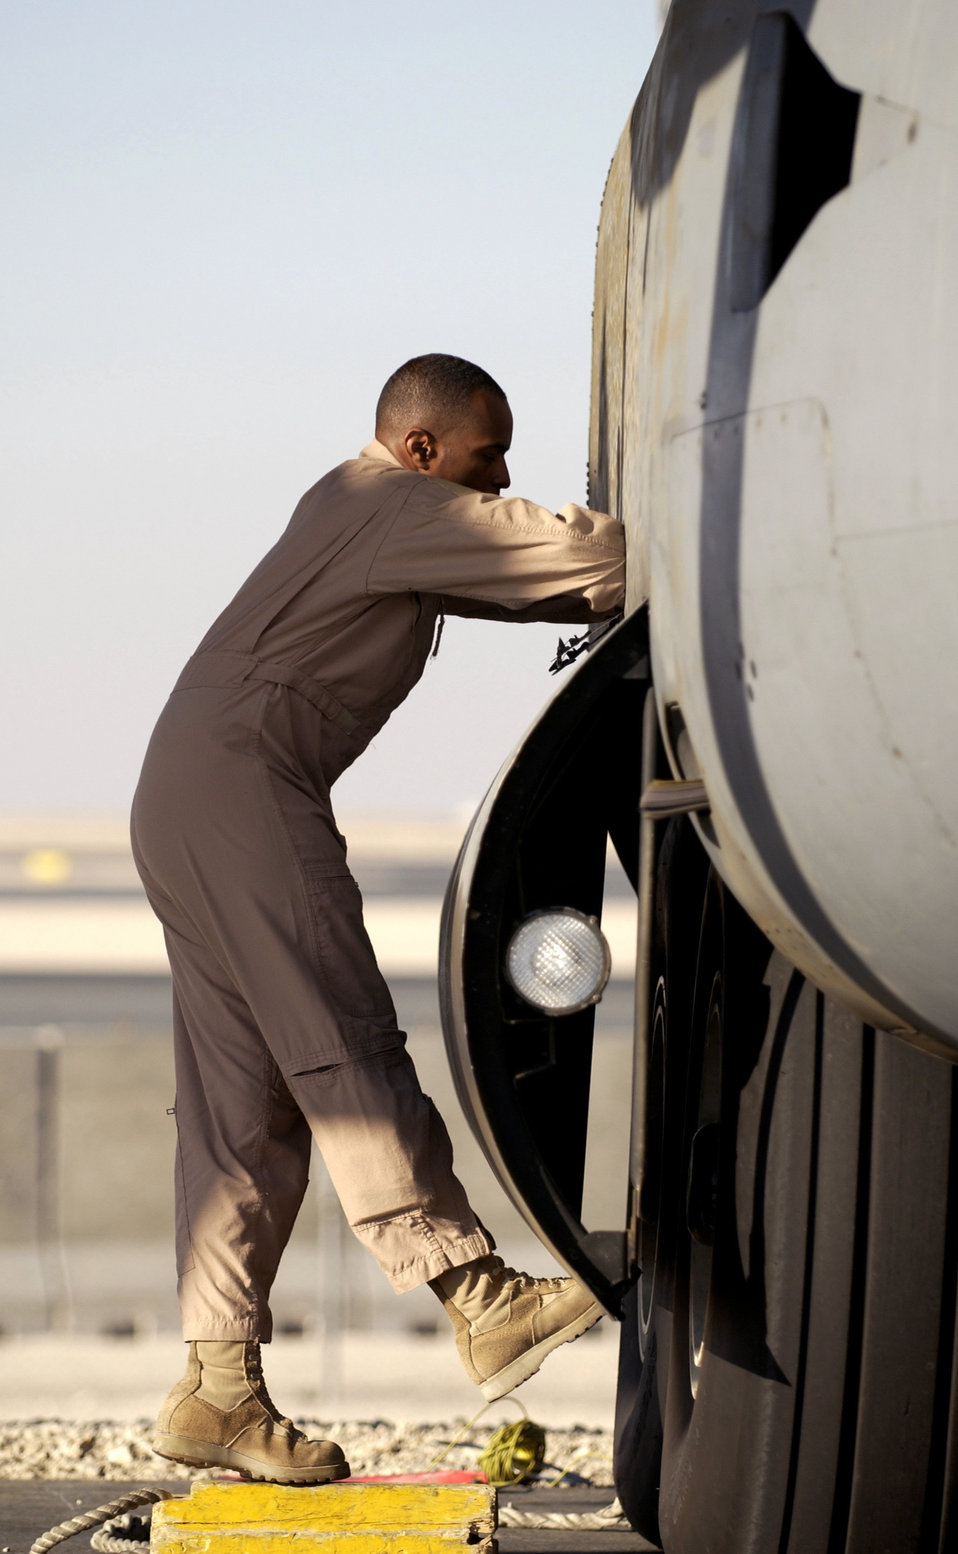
Pre-flight inspections

SOUTHWEST ASIA -- Tech. Sgt. Nelson Reyes conducts pre-flight inspections on a C-130 Hercules at a forward deployed location here Dec. 4. The C-130s are supporting both operations Iraqi Freedom and Enduring Freedom. Sergeant Reyes is an engineer assigned to the 379th Air Expeditionary Wing.